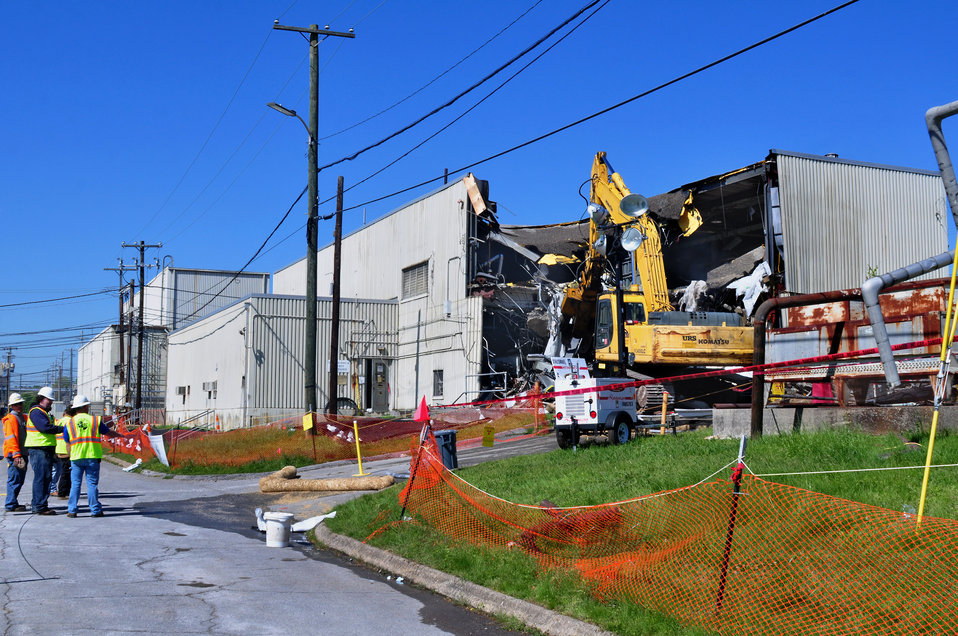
DandD work on Bld. 3508 at Oak Ridge National Lab.

12-077-68 DOE photo by Lynn Freeny

Oak Ridge Tennessee 4-13-2012